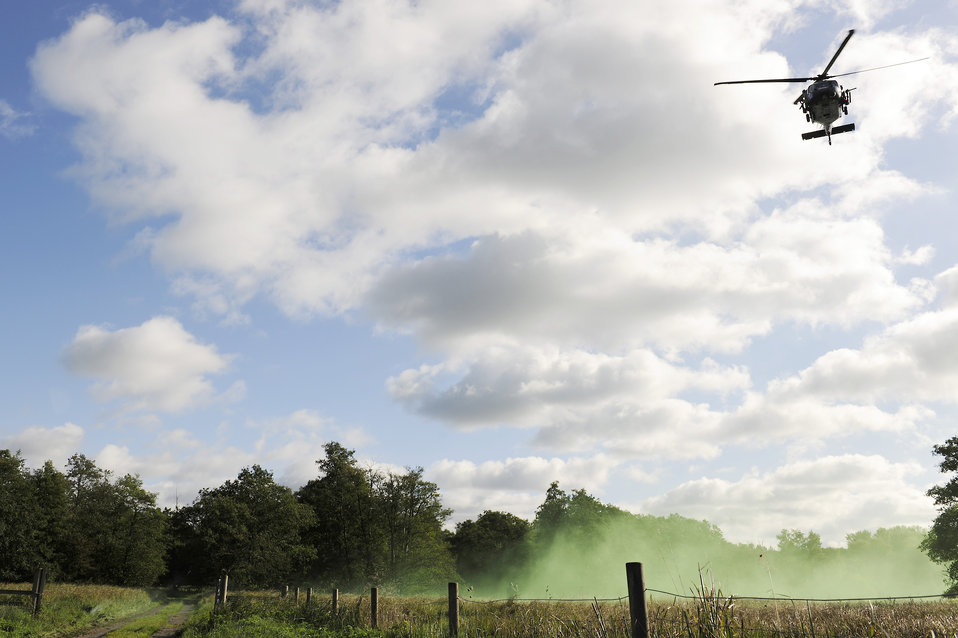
Subsurface recovery exercise

The crew of an HH-60G Pave Hawk helicopter prepares to drop off remaining dive equipment for the 56th Rescue Squadron pararescuemen Oct. 20, 2010, at Stanford Training Area, England. The pararescuemen were preparing to aid British ground forces and conduct underwater scuba operations.